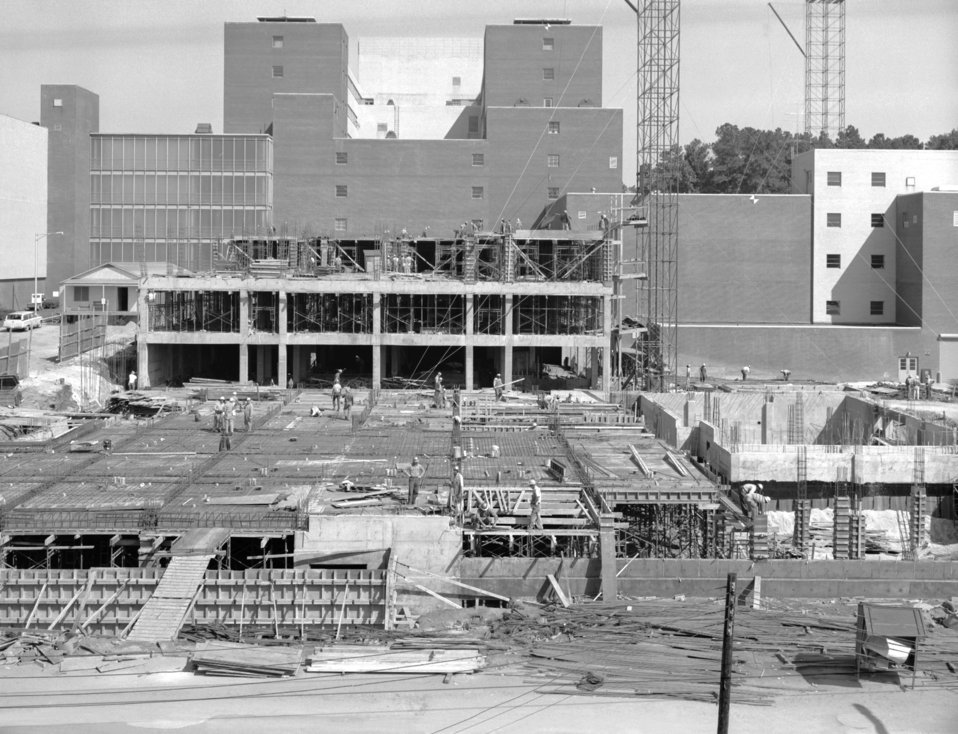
Lab additions E & D under construction at the Roybal Campus, Clifton Road, in 1964 (looking northeast).